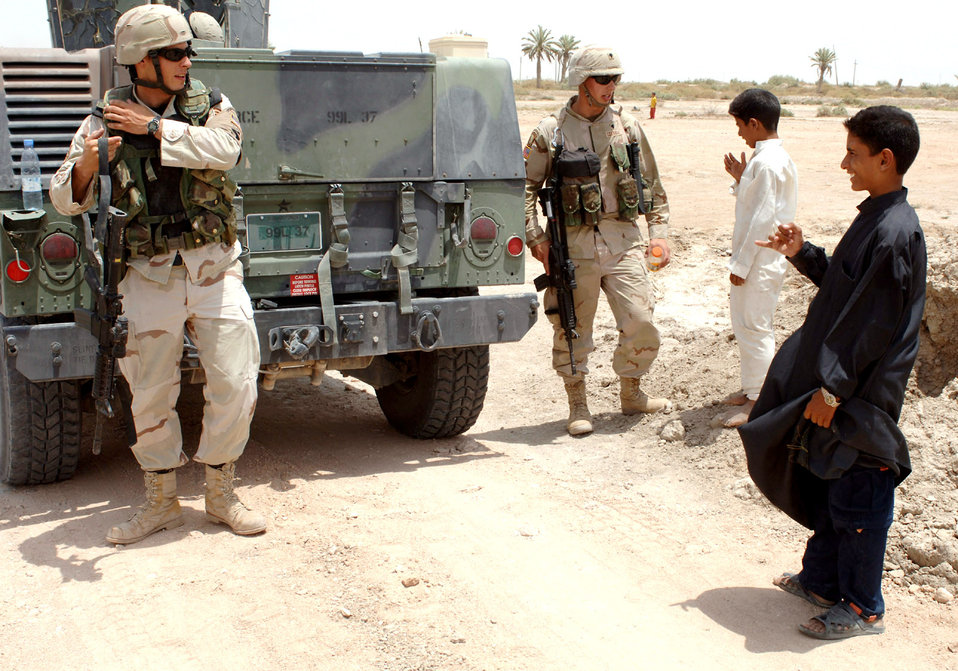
Brothers reunite in Iraq, share security patrol mission

IRAQ -- Staff Sgt. Brian Czerniak (left) and his younger brother, Army Spc. Derek Czerniak, greet two locals during a recent patrol mission. Specialist Czerniak, who is deployed to an undisclosed location in Iraq, jumped at the opportunity to visit Ali Base and watch his brother in action. Sergeant Czerniak is a patrol leader with the 407th Expeditionary Security Forces Squadron and is deployed from Charleston Air Force Base, S.C. Specialist Czerniak is an AH-64D Apache Longbow crew chief with the 2nd Battalion, 101st Aviation Regiment and is deployed from Fort Campbell, Ky.